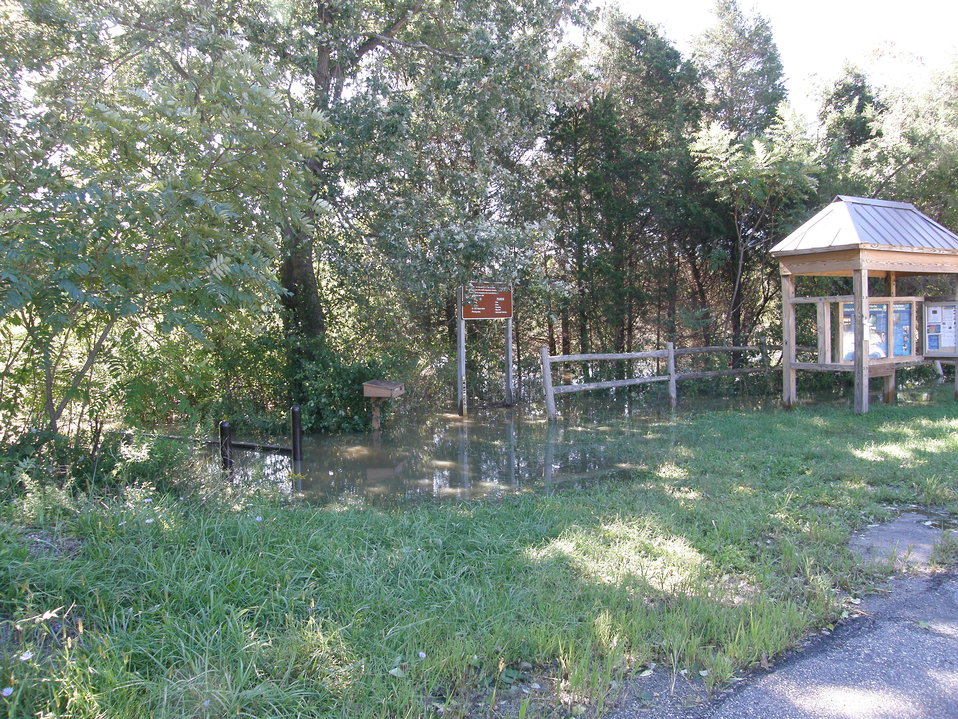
Hurricane Damage at Wallkill River National Wildlife Refuge August 30, 2011

Flooding at Bassett's Bridge Canoe Launch and fishing access area, Sussex, NJ.